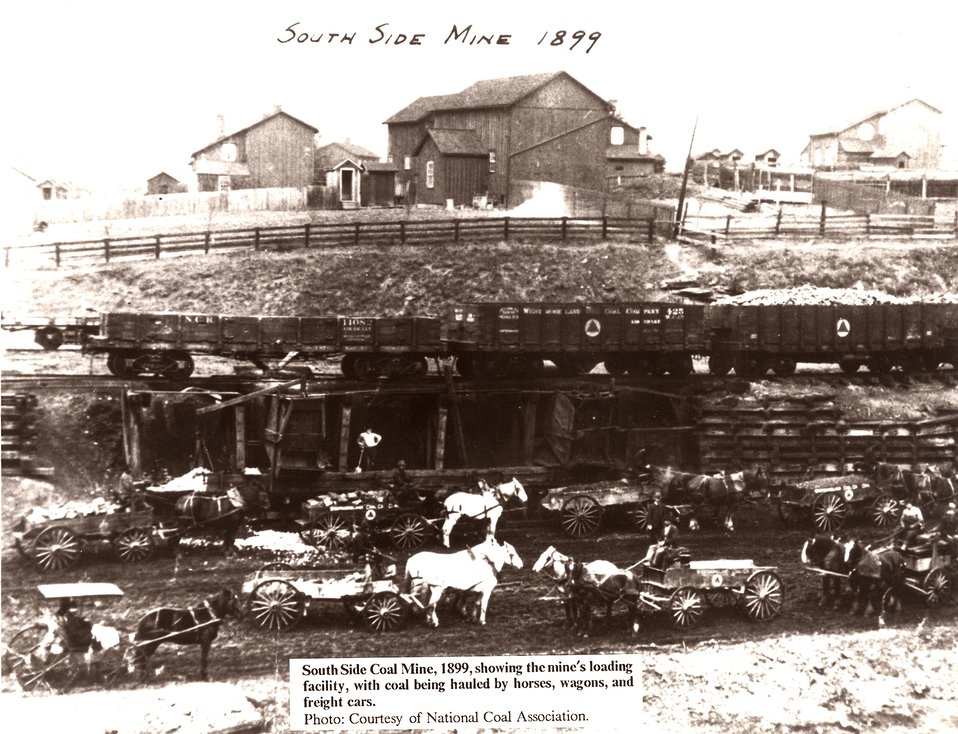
South side coal mine, 1899, showing the mine's loading facility, with coal being hauled by horses, wagons, and freight cars.